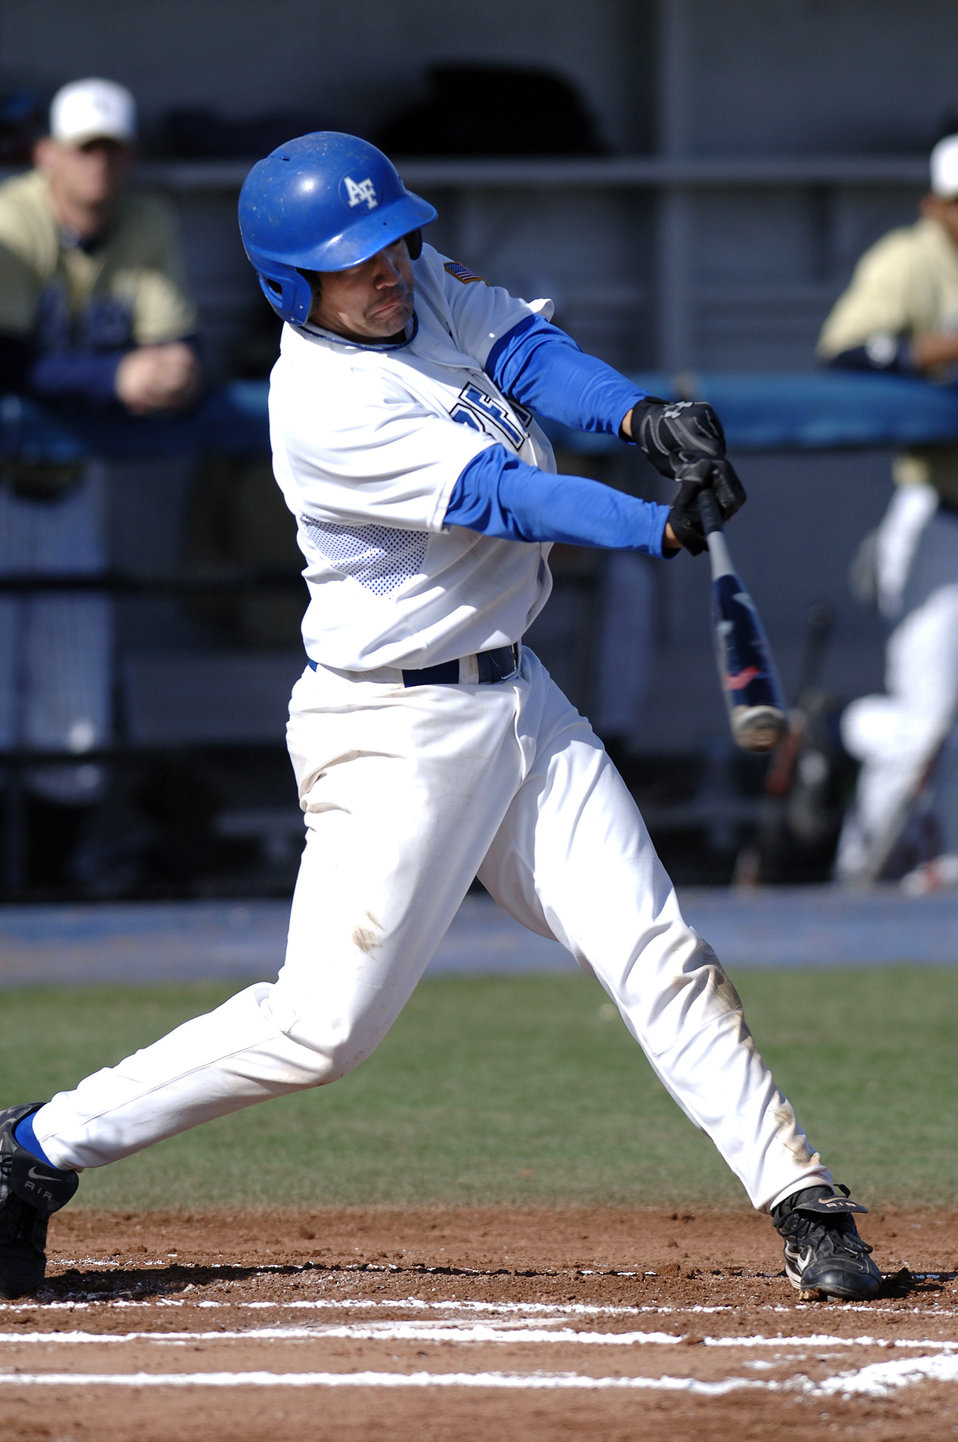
Falcons fall to Northern Colorado

Senior cadet Geno Salazar connects for a leadoff home run during play against the Northern Colorado Bears Feb 10. He is the shortstop for the AF Academy Men Falcons baseball team. The Bears swept the three game weekend series from the Falcons.